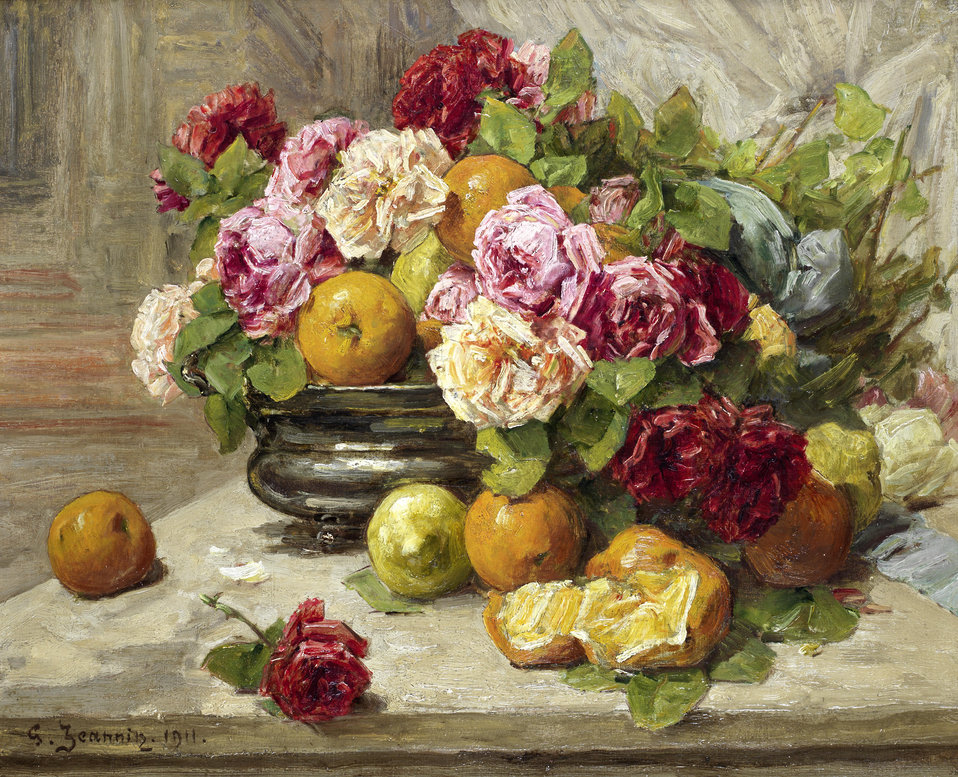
Still life of roses and fruit. Signed and dated 'G. Jeannin. 1911.' (lower left); oil on canvas; 50 x 61 cm